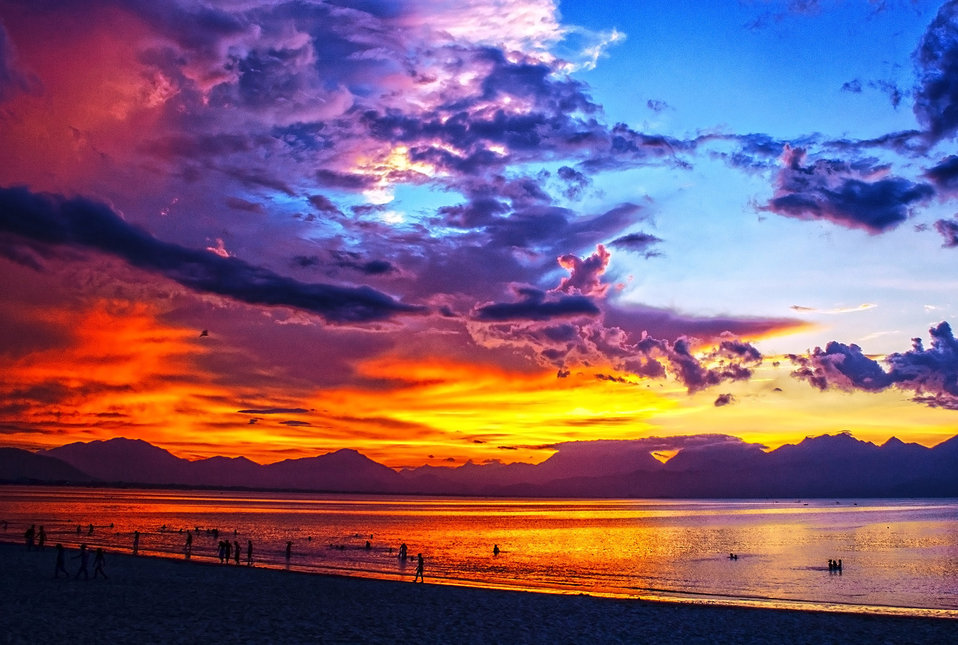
Sunset #5

Sunset on the bay of danang, central vietnam..